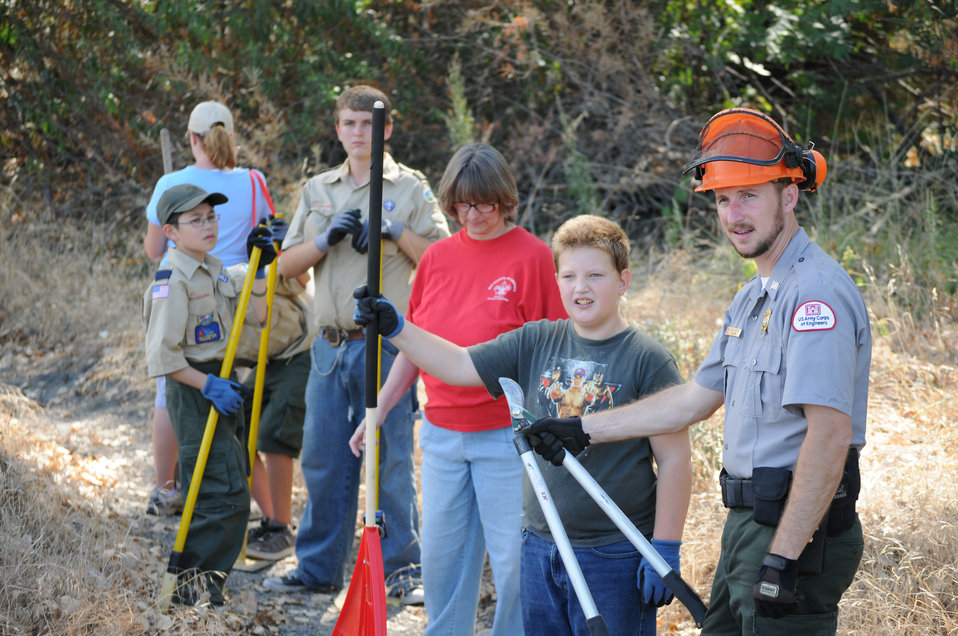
National Public Lands Day at Black Butte Lake

U.S. Army Corps of Engineers park ranger Seth Jantzen (right) and scouts with Boy Scout Troop 4 cleared brush from a hiking trail at Black Butte Lake, Calif., Sept. 24 in celebration of National Public Lands Day. Black Butte was one of seven U.S. Army Corps of Engineers Sacramento District recreation parks that participated in the event.